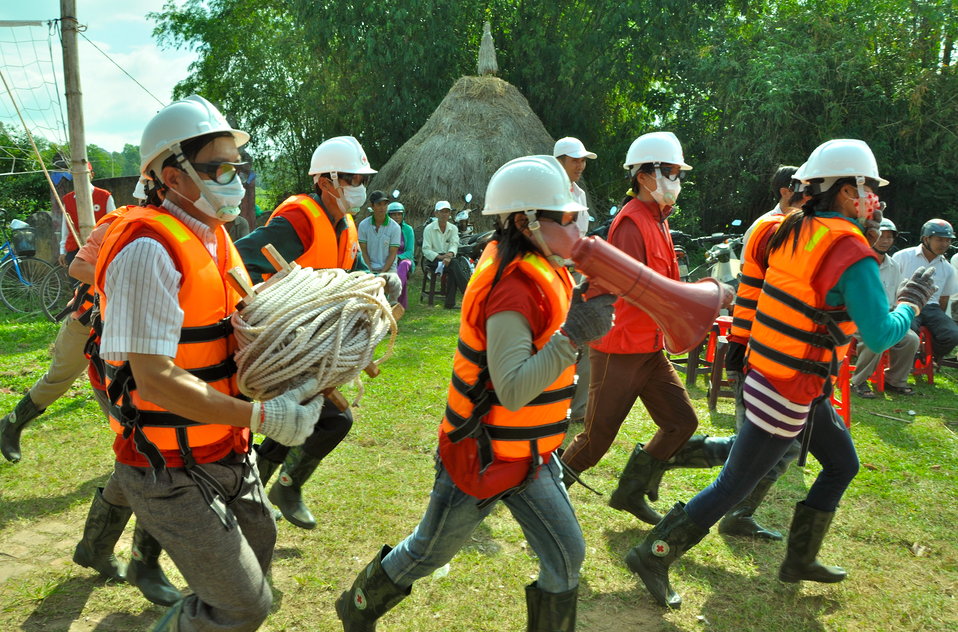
USAID, Red Cross Support Disaster Response Drill in Duy Hoa Commune, Quang Nam Province

Duy Hoa Commune, Quang Nam Province
December 5, 2012